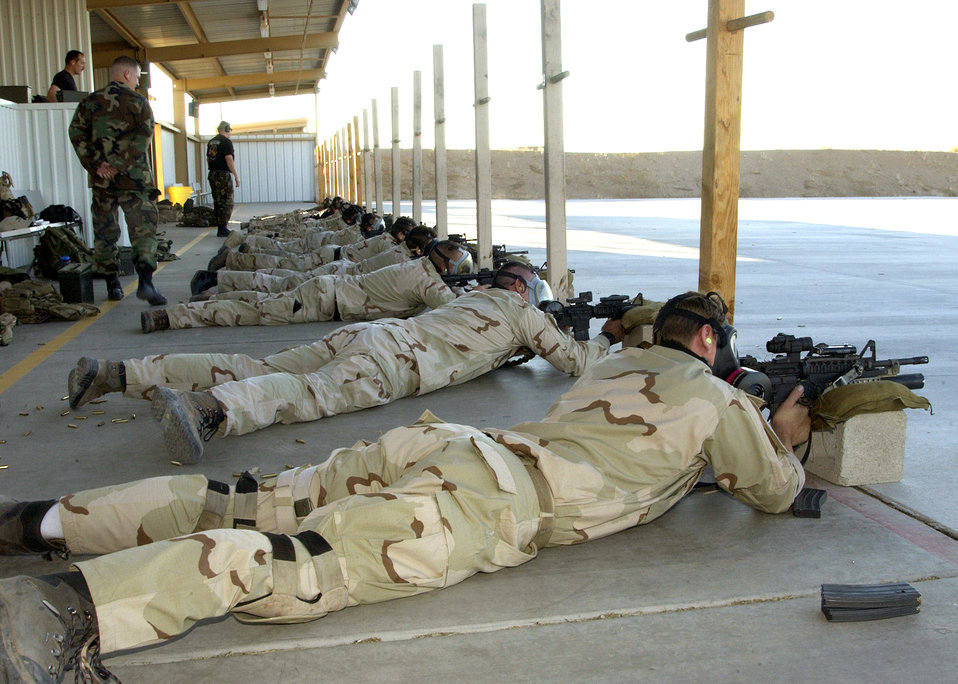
Making their mark

DAVIS-MONTHAN, Ariz. (AFPN) -- Pararescue team members fires M-4 rifles equipped with grenade launchers and laser site during their annual training here. The team is from the 306th Rescue Squadron.